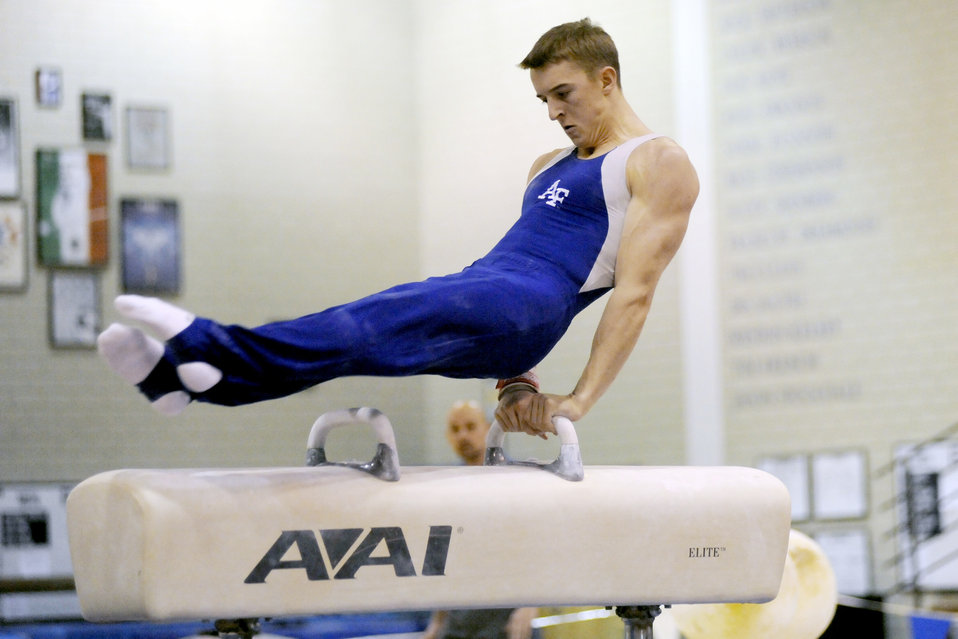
Falcon gymnasts lose in home final

Air Force sophomore Chase Nobels competes on the pommel horse during the Falcons home finale against Illinois-Chicago at the U. S. Air Force Academy's cadet gymnasium in Colorado March 7, 2010. Nobles scored a 14.7 on the pommel horse setting a new program record. The Falcons set a new team record, beating their previous record of 342.55 which was set last year in Arizona, but fell to Illinois-Chicago 348.60 - 346.45.